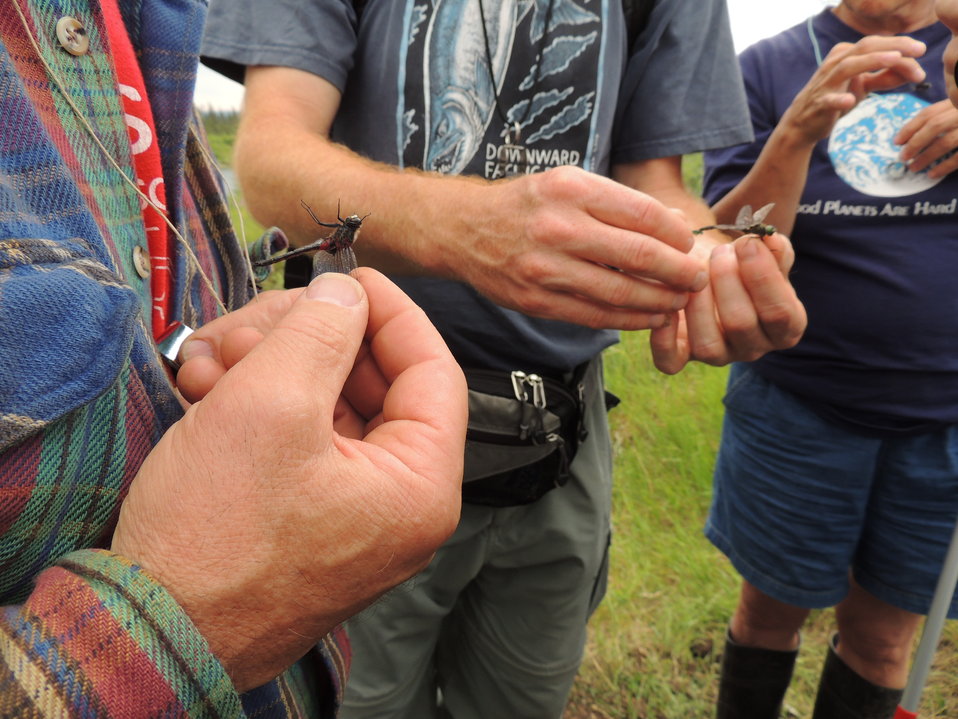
Many different species to identify!

(USFWS)